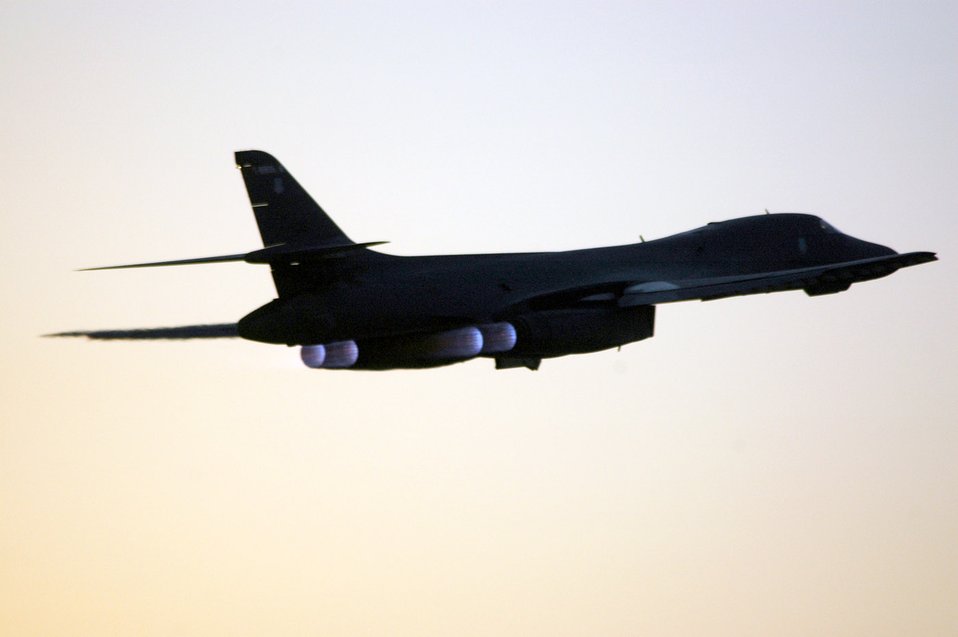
Airpower Summary for June 20, 2007

A B-1B Lancer with the 379th Air Expeditionary Wing takes of from a forward deployed location. Carrying the largest payload of both guided and unguided weapons in the Air Force inventory, the multi-mission B-1 is the backbone of America's long-range bomber force. It can rapidly deliver massive quantities of precision and non-precision weapons against any adversary, anywhere in the world, at any time.